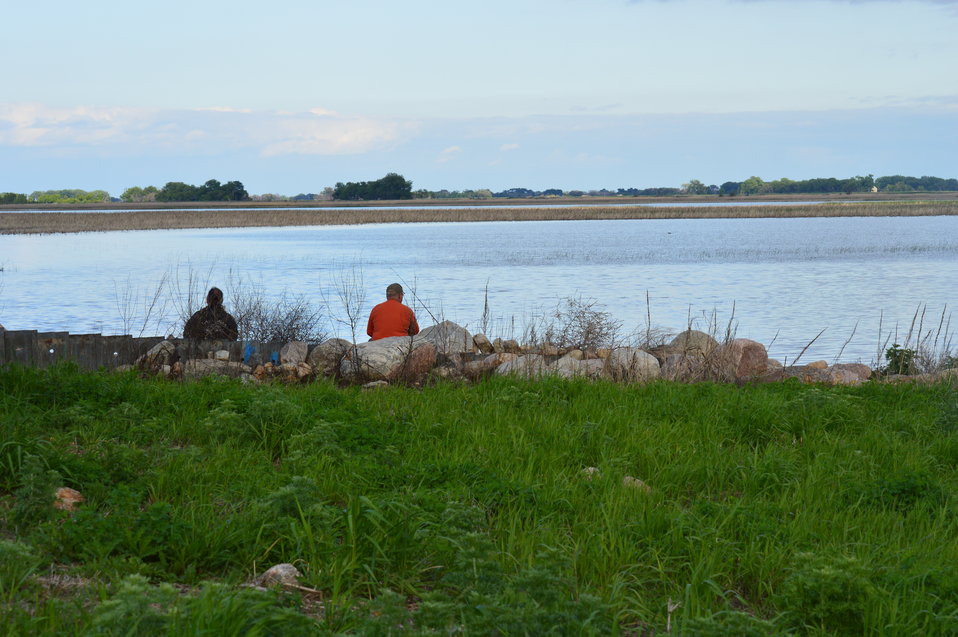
Fishing in Sand Lake

Scenery and wildlife at Sand Lake National Wildlife Refuge in South Dakota